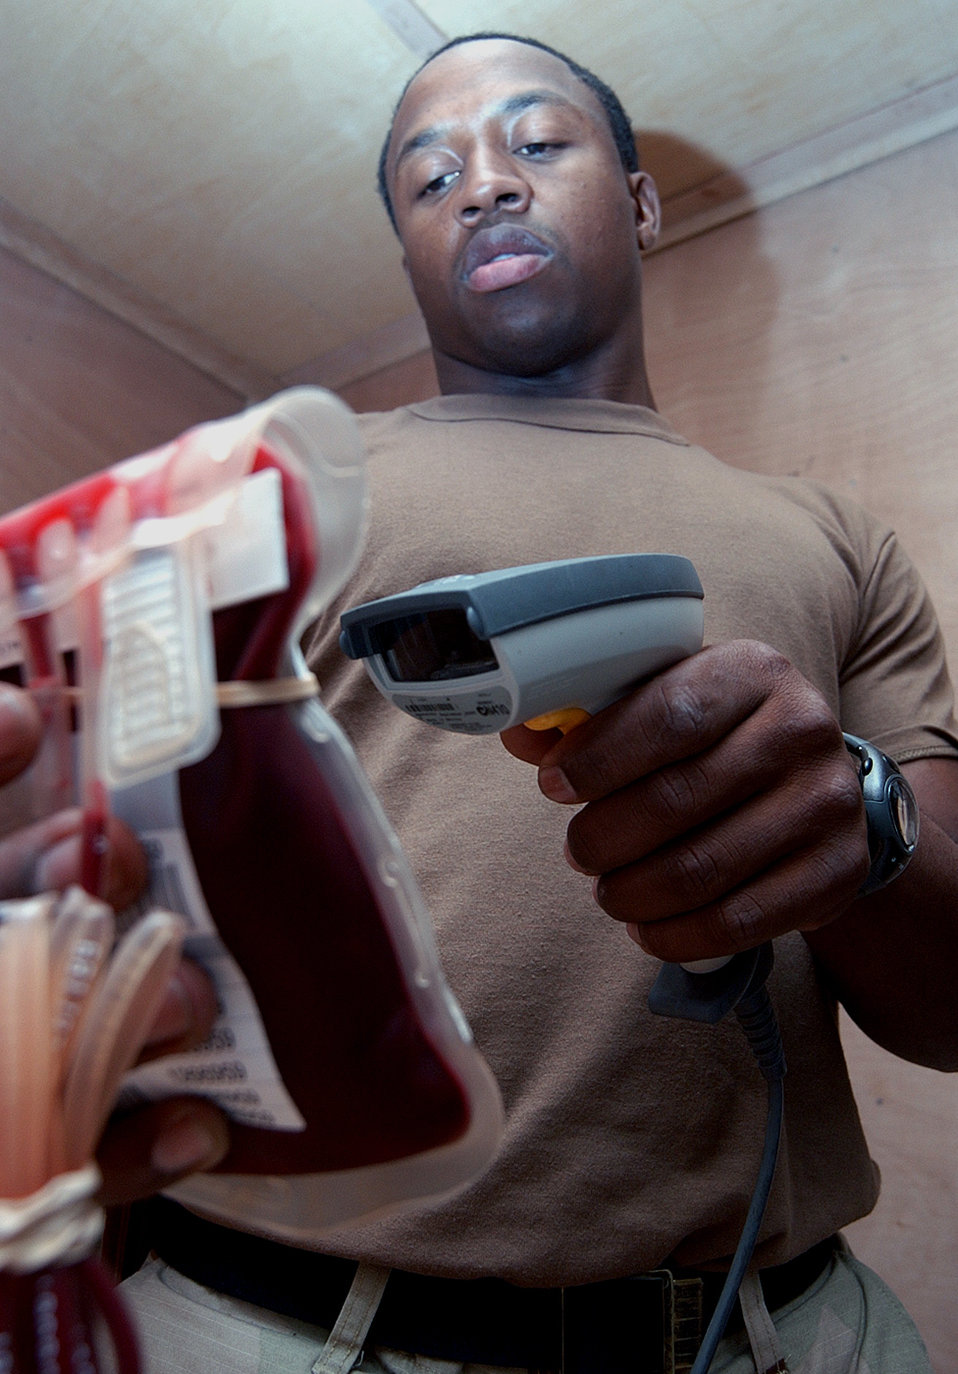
Blood Supply

AL UDEID AIR BASE, Qatar -- Airman 1st Class Covito Redman scans a bag of blood here May 14. The Airmen in the 379th Expeditionary Medical Group's blood transshipment center can track blood from donor to recipient and everywhere in between because of accountability procedures. Airman Redman is deployed from Davis-Monthan Air Force Base, Ariz.